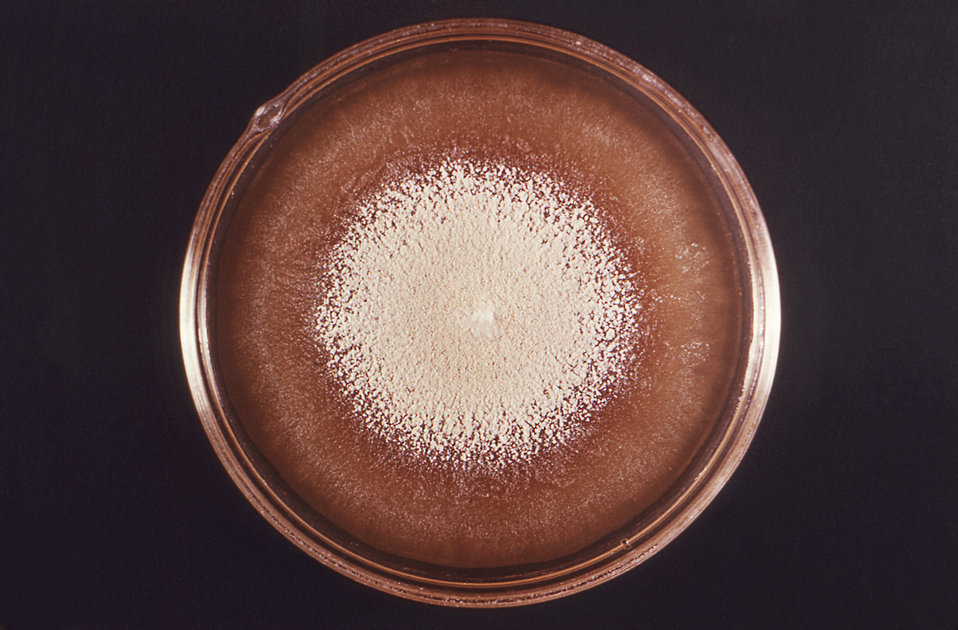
This image depicts a front view of a Petri dish culture plate, containing Sabouraud dextrose agar medium upon which a reddish colored colony of the dermatophyte, Trichophyton mentagrophytes var. granulare had been cultivated. T. mentagrophytes colonial coloration ranges from white to bright yellowish-beige, to red-violet.